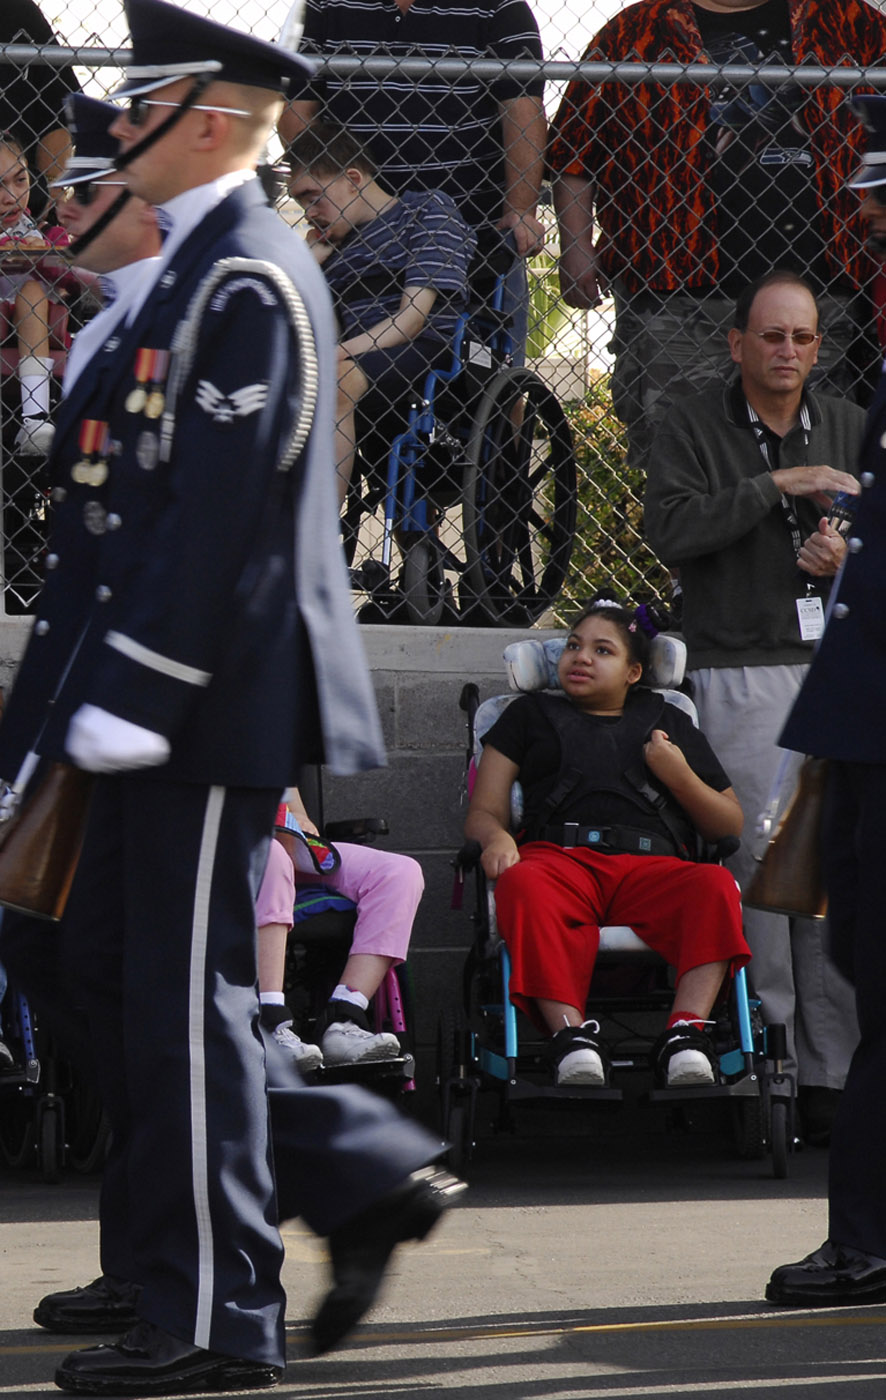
Honor Guard drill team performs for special-needs students

Members of the Air Force Honor Guard drill team perform at the John F. Miller School for Special Needs Nov. 8 in Las Vegas. The drill team planned a special performance for the students at the school during their visit to the city and Nellis Air Force Base, Nev., for the final week of the Air Force's 60th Anniversary celebrations.